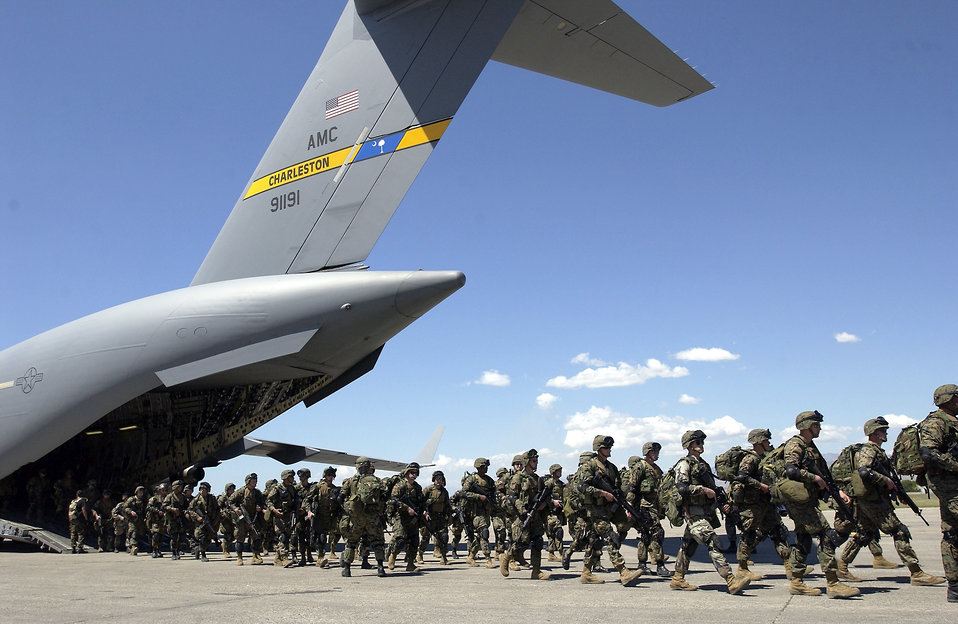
Helping Haiti

PORT-AU-PRINCE, Haiti -- Marines from Camp Lejeune, N.C., arrive here March 3. They flew in a C-17 Globemaster III from Charleston Air Force Base, S.C.